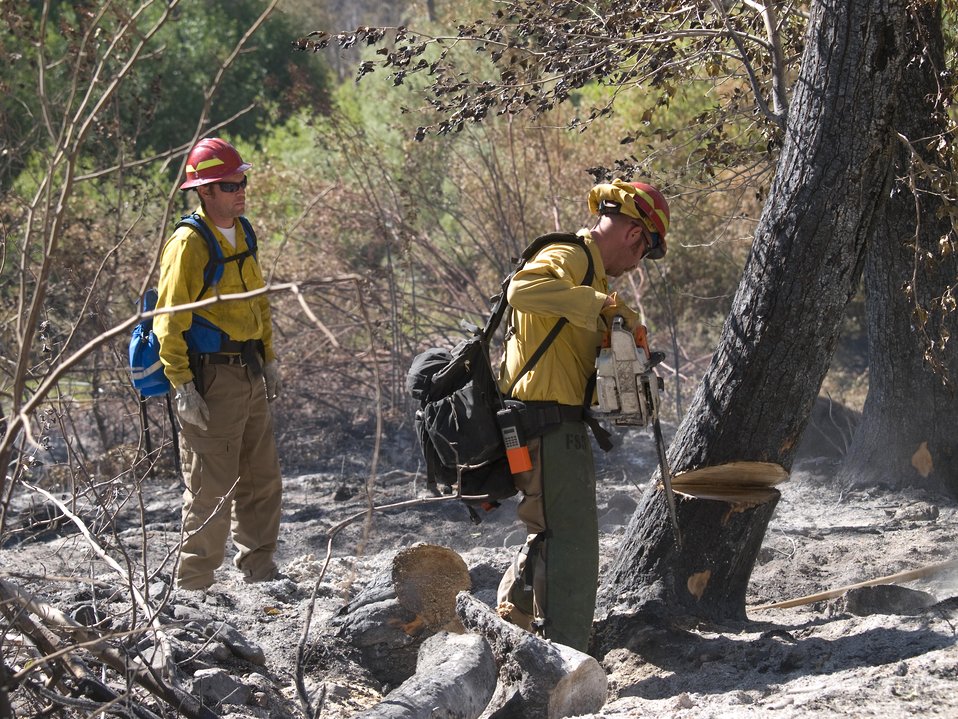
Firefighters work on the Lodgepole Fire. The Lodgepole Fire in the Salmon-Challis National Forest near Challis, ID began on Jul. 20, 2013 by lightning has consumed approximately 20,080 acres and is approximately 15% contained.